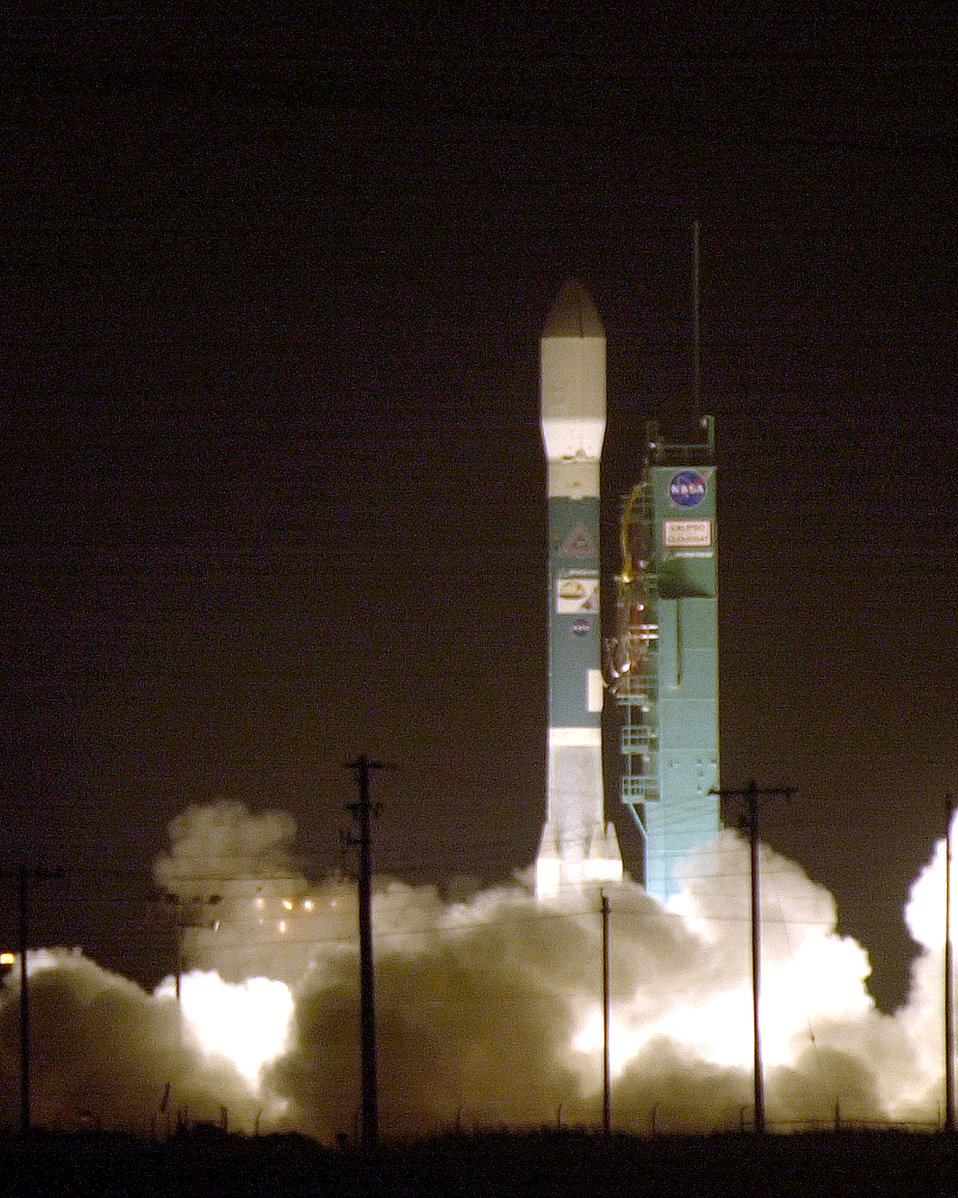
Delta II launch successful

A Delta II rocket takes off from Space Launch Complex 2 at Vandenberg Air Force Base, Calif., at 03:02 a.m. local time on Friday, April 28, 2006. The rocket was carrying NASA?s Cloud-Aerosol Lidar and Infrared Pathfinder Satellite Observations, or CALIPSO, and CloudSat satellites.